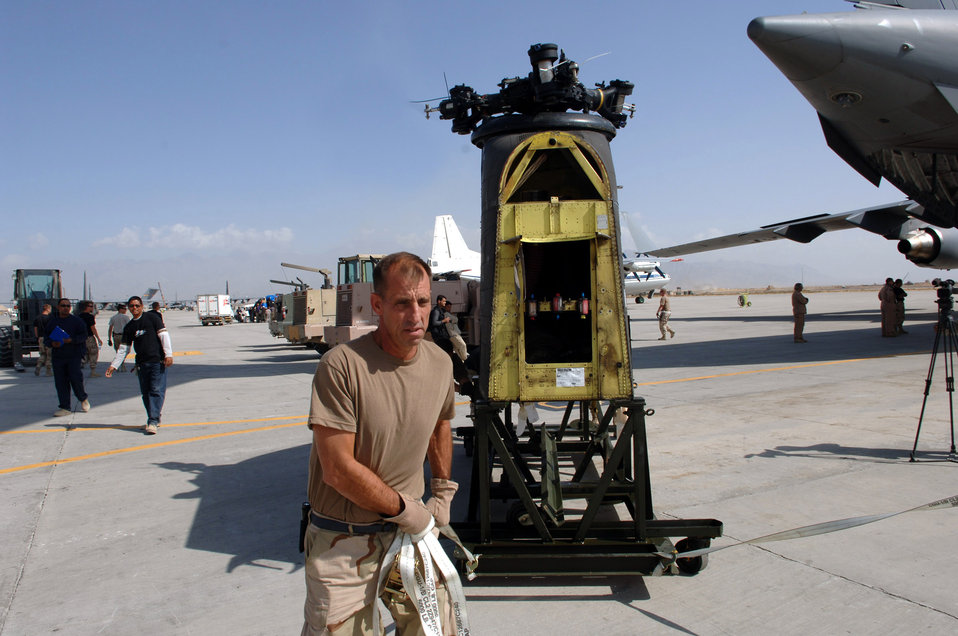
Pakistan relief continues

BAGRAM AIR FIELD, Afghanistan -- Master Sgt. Harold Miller rolls the back rotor of a CH-47 Chinook heavy lift helicopter off the back of a C-17 Globemaster III here. The helicopter arrived in parts from Fort Hood, Texas. After reassembly, it will fly to Pakistan to help with earthquake relief operations. This was the first of 30 CH-47s to transit through Bagram. The base has been a hub of relief efforts. Master Sgt. Miller, the ramp services team chief with the 455th Expeditionary Logistics Readiness Squadron is deployed here from Charleston, West Virginia.